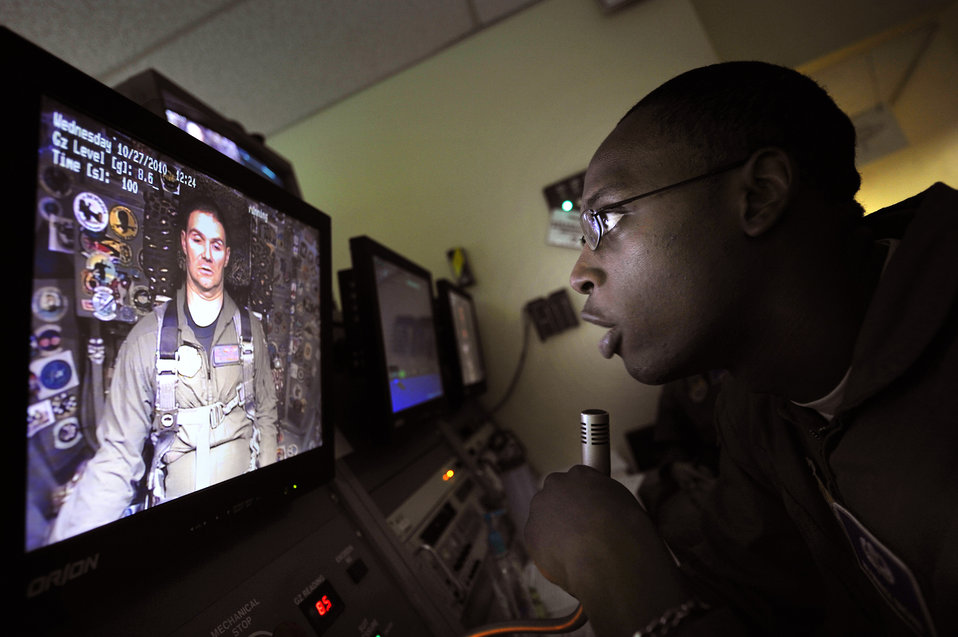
The final spin

A technician coordinates with an aircrew member taking one of the final rides in the centrifuge Oct. 27, 2010, at Holloman Air Force Base, N.M. Operated by the U.S. Air Force School of Aerospace Medicine, Airmen at the Aerospace Physiological Training Center concluded 22 years of centrifuge training.